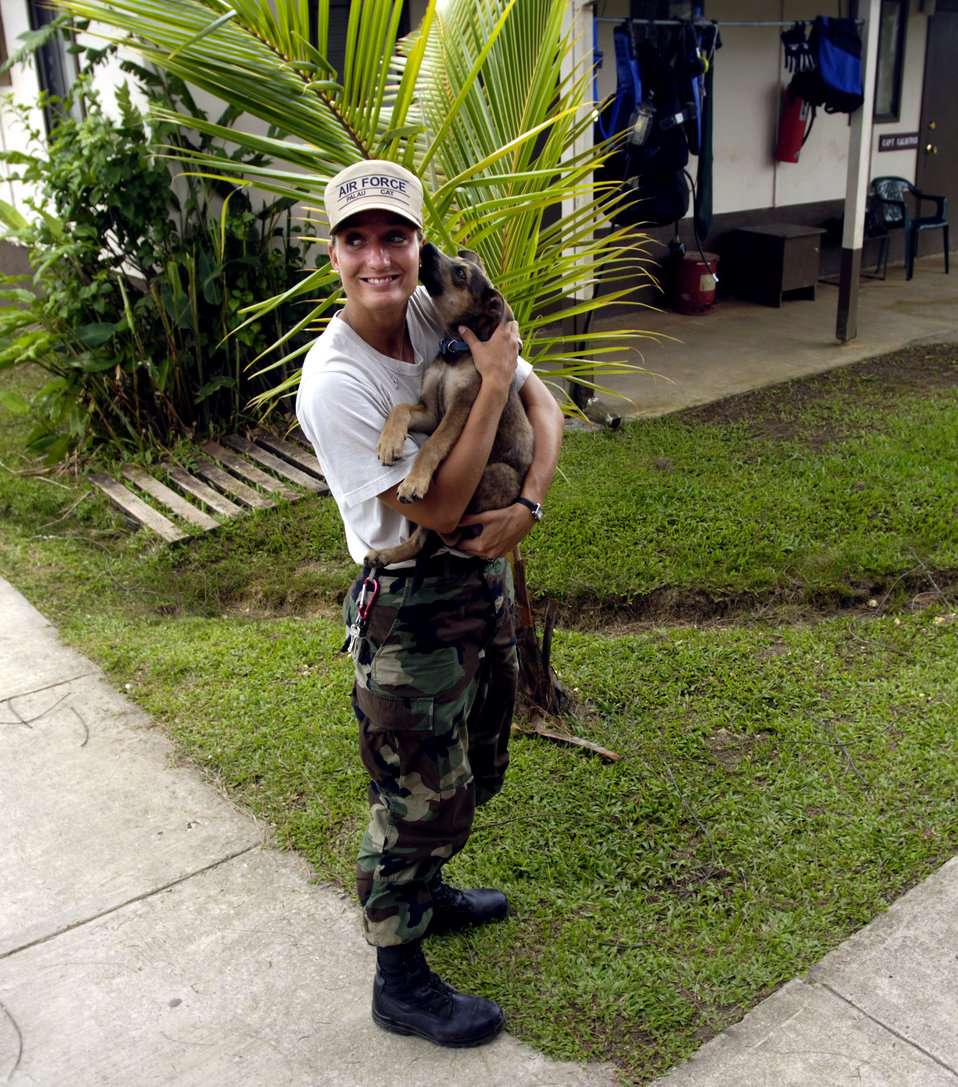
Taking Action

BABLEDAOB, Palau (AFPN) -- Capt. Kristen Bakotic plays with Cody the camp mascot. Capt. Bakotic is the commander for the Palau civic action team. The mission of the program is twofold. It aids host nations in their basic infrastructure development and provides a favorable U.S. military presence through community construction, apprentice training, medical civic action program and community relations.